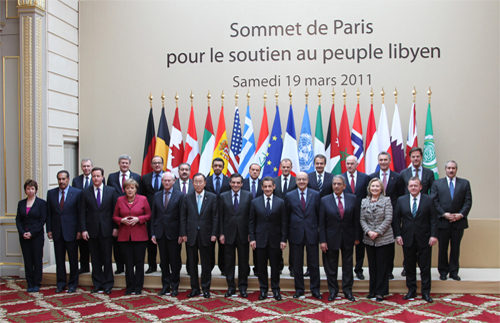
Secretary Clinton Poses for a Family Photo With World Leaders

U.S. Secretary of State Hillary Rodham Clinton poses for a family photo with world leaders at the crisis summit on Libya at the Elysee Palace in Paris, France, on March, 19, 2011.